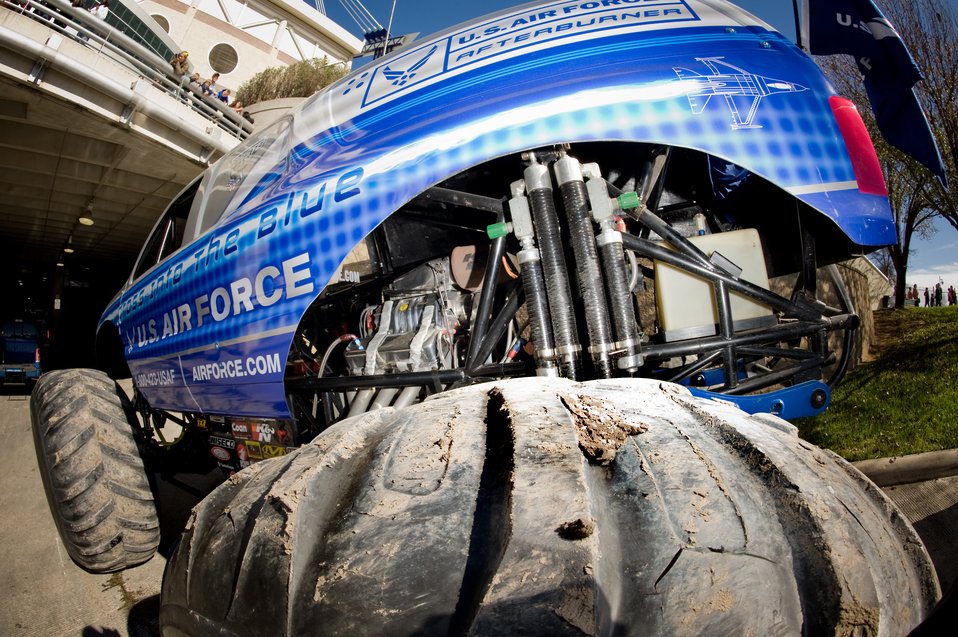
AF flies high at Monster Jam

2009 Monster Jam fans got an eyeful at the Alamodome on Jan 11 in San Antonio when Air Force Afterburner and 15 other monster trucks were staged to make their entrance into the Alamodome. Approximately 45,000 people attended the event. This monster truck has a 540 cubic-inch Merlin supercharged racing V-8 engine that churns out 1,425 horsepower for its driver, Damon Bradshaw. The 10,000-lb vehicle can launch from mounds of dirt and crushed cars to a height of more that 40 feet in the air. Afterburner is equipped with four-wheel steering and can be made to continuously spin on a dime. The wheels and tires are 66